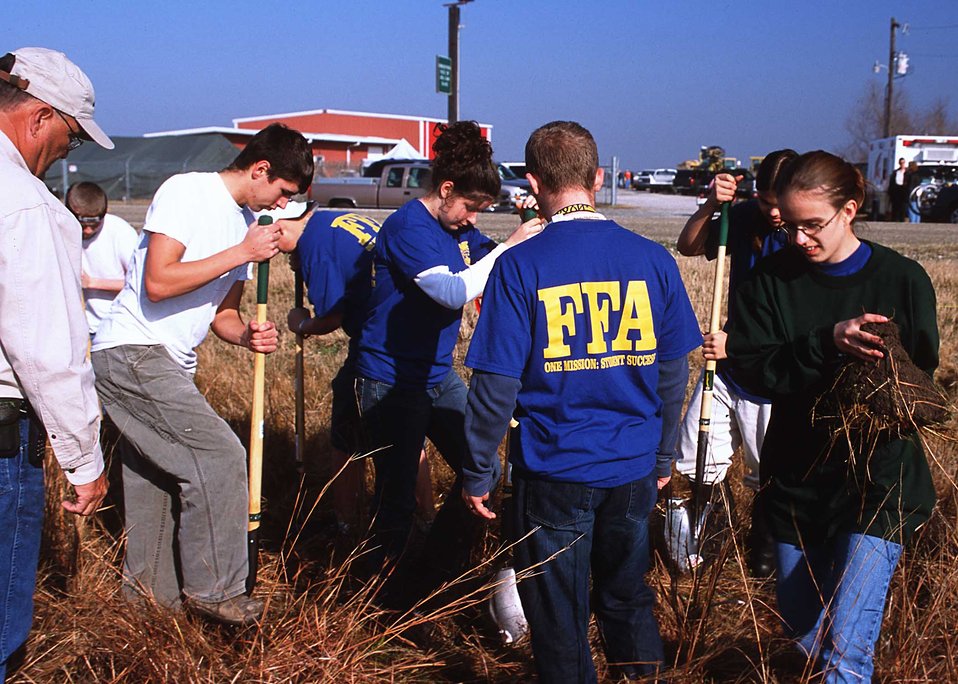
Earth team volunteers of NRCS help transplant native prairie plants from a roadside near Gueydan, Louisiana, to a restored wetland nearby.